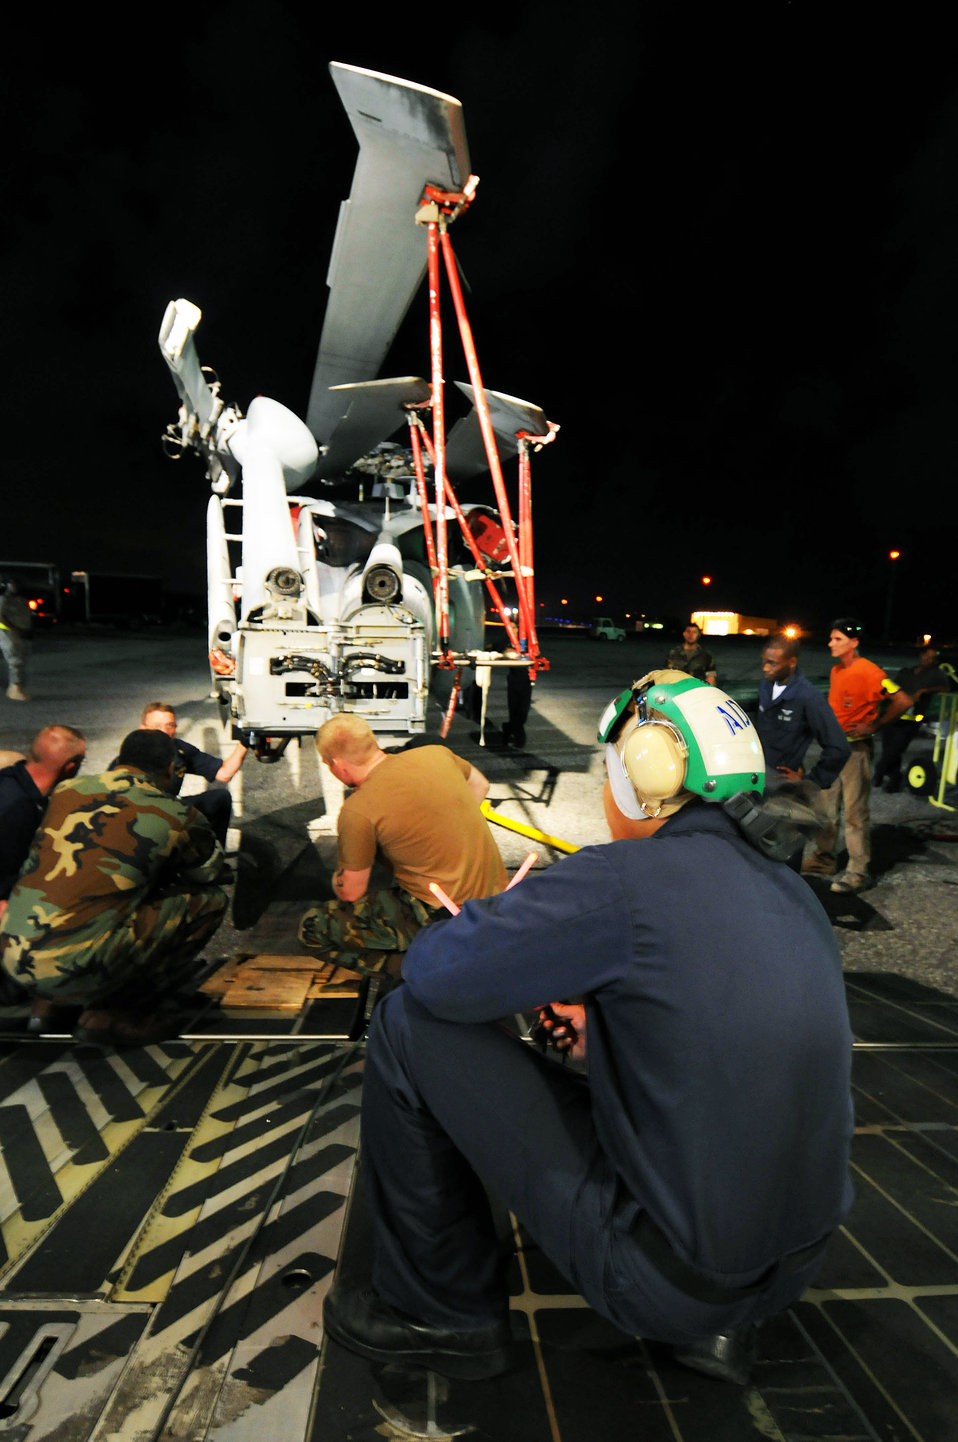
Just the right fit

Airmen from the West Virginia Air National Guard's 167th Airlift Wing and the 734th Air Mobility Squadron at Anderson Air Force Base, Guam, along with Sailors from Helicopter Sea Combat Squadron TWO-FIVE at Guam's A.B. Won Pat International Airport load three MH-60S Knighthawks and two SH-60H Sea Hawks onto a C-5 Galaxy March 13 at Andersen AFB. The helicopters were being transported to Naval Air Station North Island in San Diego.